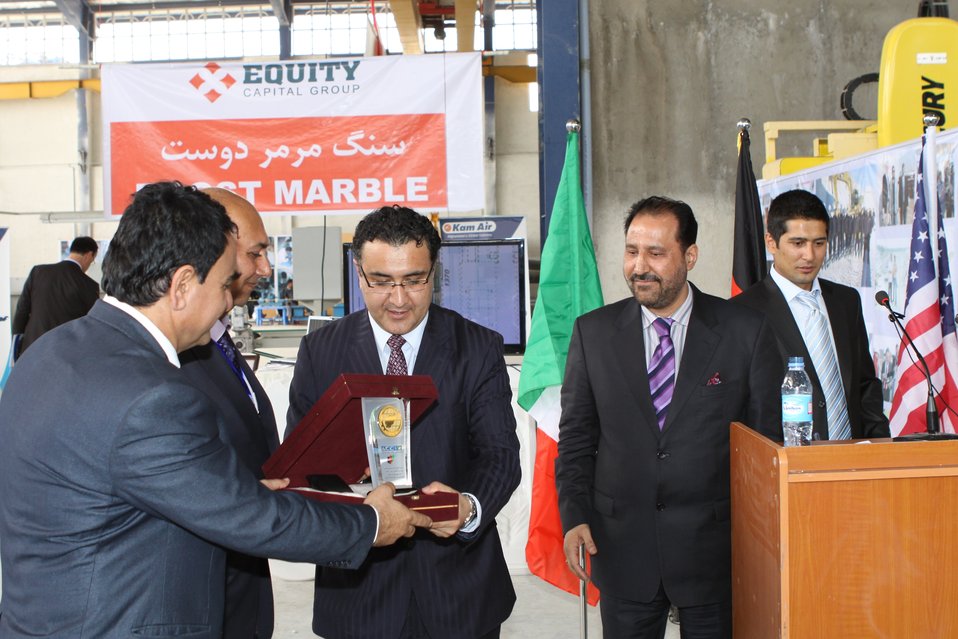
100525 Hirat Marble Conference 471